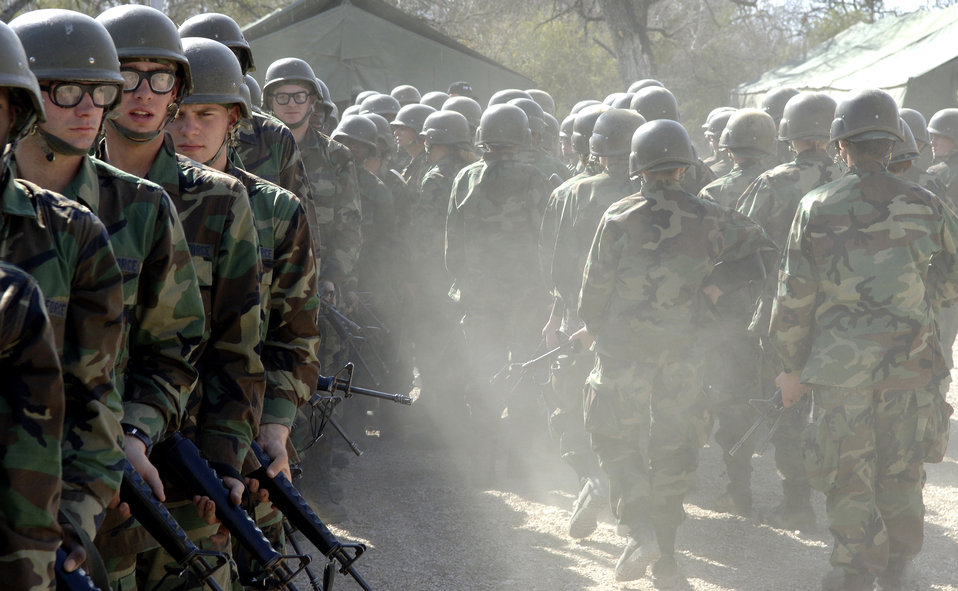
Feeding warriors

Air Force Chief of Staff General T. Michael Moseley said taking care of Airmen and making them a better-prepared force is one of the Air Force's three top priorities.